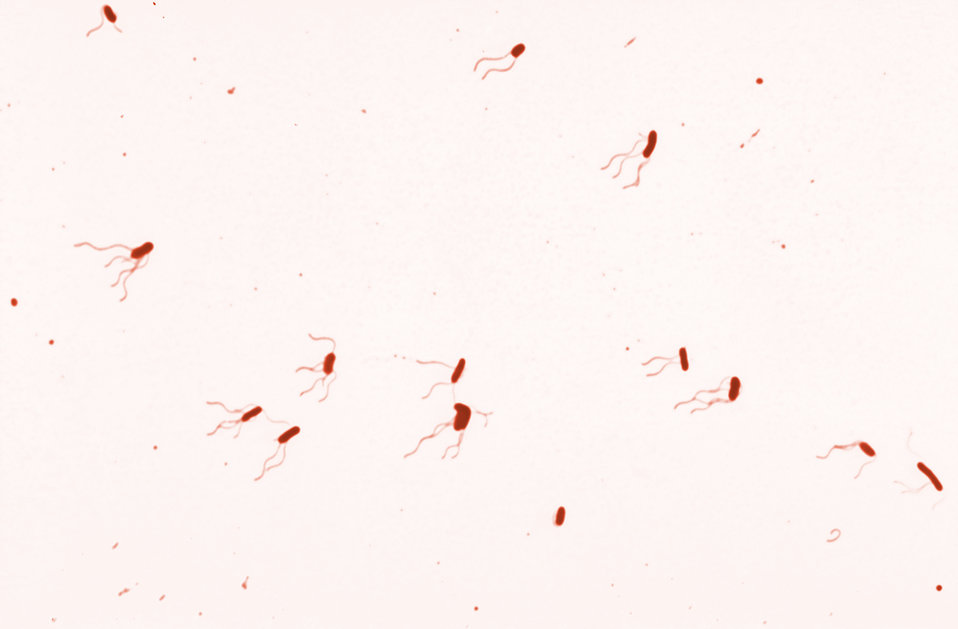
Bordetella bronchiseptica. Leifson flagella stain (digitally colorized).